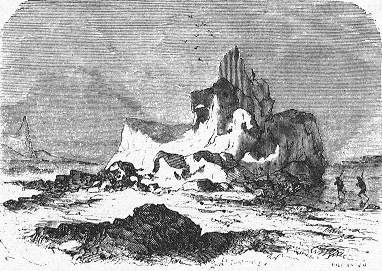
An illustration from Jules Verne's novel 'Journeys and Adventures of Captain Hatteras', part II: 'The Field of Ice' drawn by Édouard Riou and/or Henri de Montaut. Polski: Ilustracja powieści Juliusza Verne'a 'Podróże i przygody kapitana Hatterasa', części II: 'Pustynia lodowa' autorstwa Édouarda Riou i/lub Henri de Montauta. Français : Jules Verne: 'Voyages et aventures du capitaine Hatteras - Le désert de glace', Édouard Riou et Henri de Montaut.